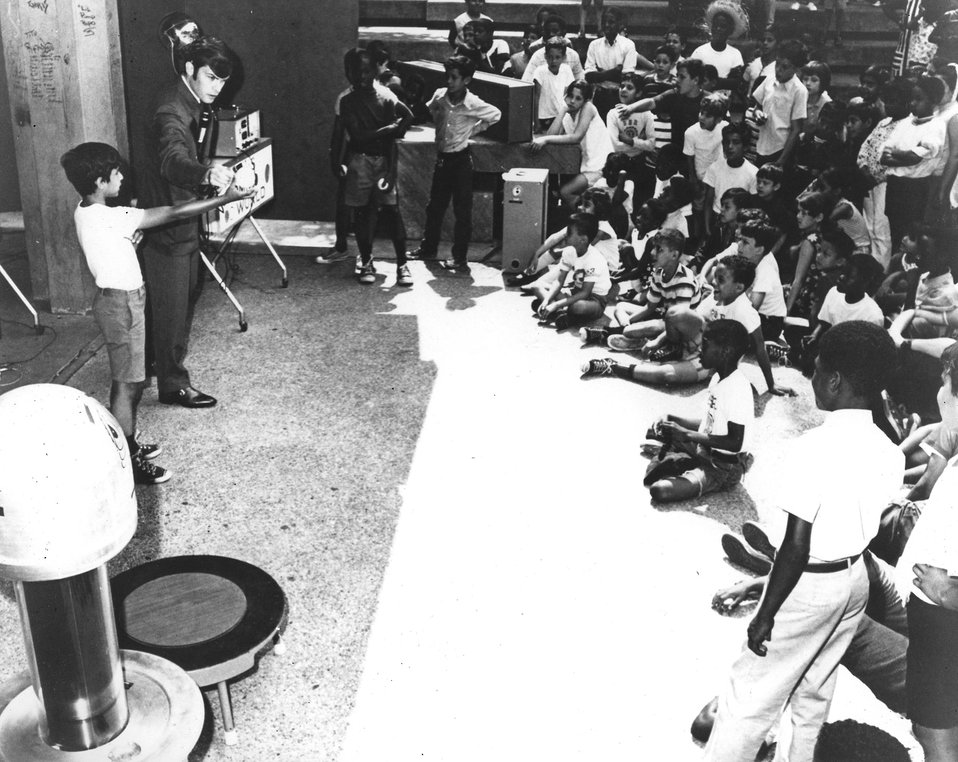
The 'This Atomic World' lecture-demonstrations moved out of the high school circuit into New York City's neighborhood youth and recreation centers during the summer of 1970. c. 1971